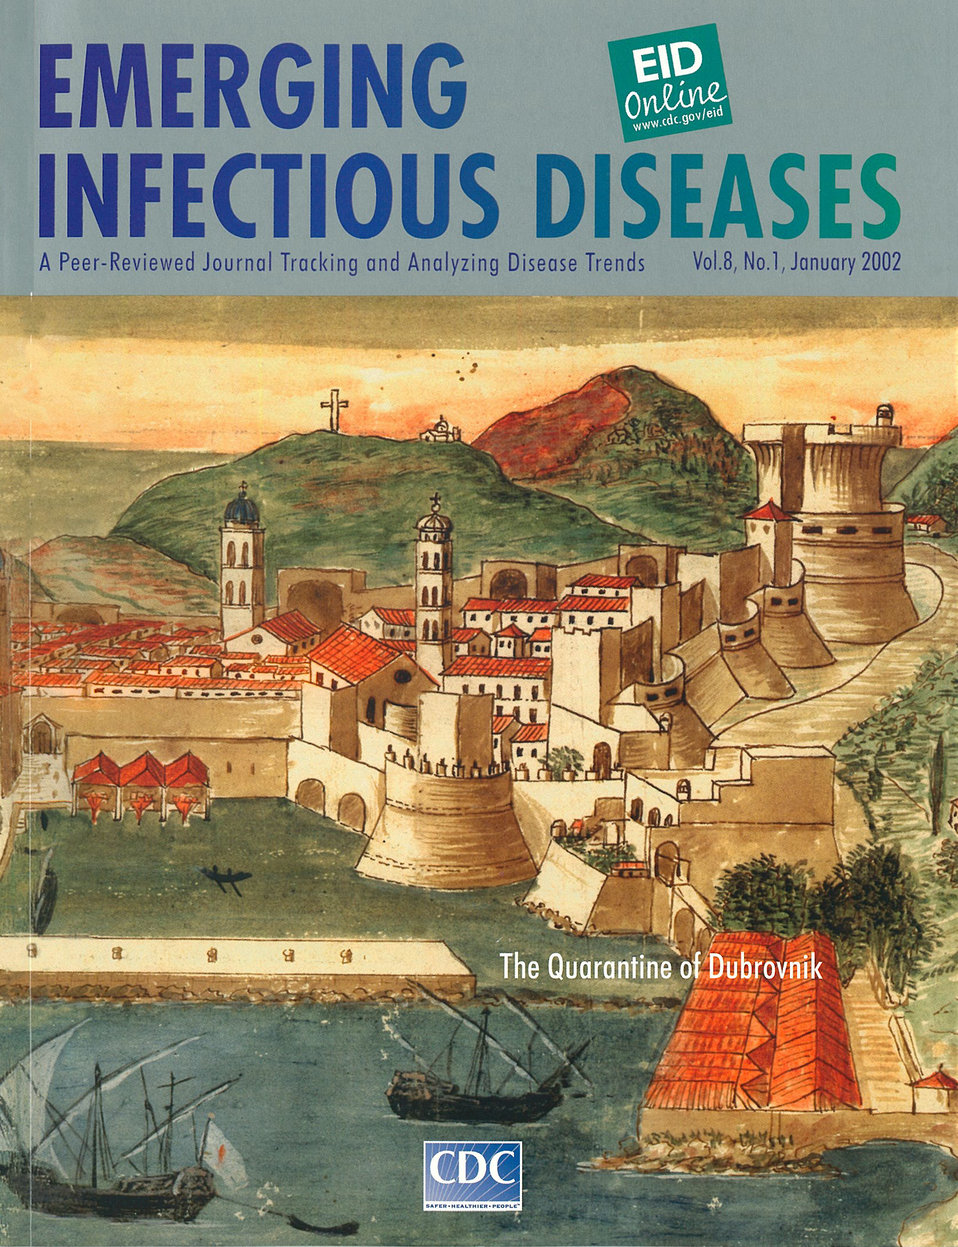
Emerging Infectious Diseases (EID) cover artwork for Volume 8, Number 1, January 2002 issue.